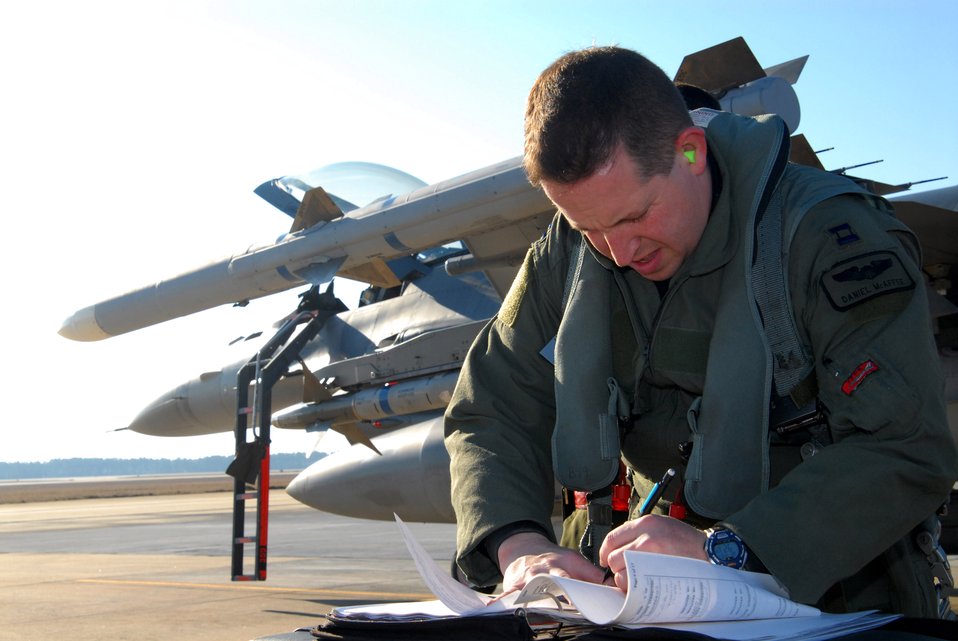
Iron Thunder roars through Shaw

Capt Daniel McAffee annotates flight logs before piloting an F-16 Fighting Falcon in support of Exercise Iron Thunder Feb. 7 at Shaw Air Force Base, S.C. The objective of the exercise is to prepare units for future contingency operations by offering a chance for players to be exposed to missions identical to those faced in combat. Captain McAffee is a 77th Fighter Squadron pilot.